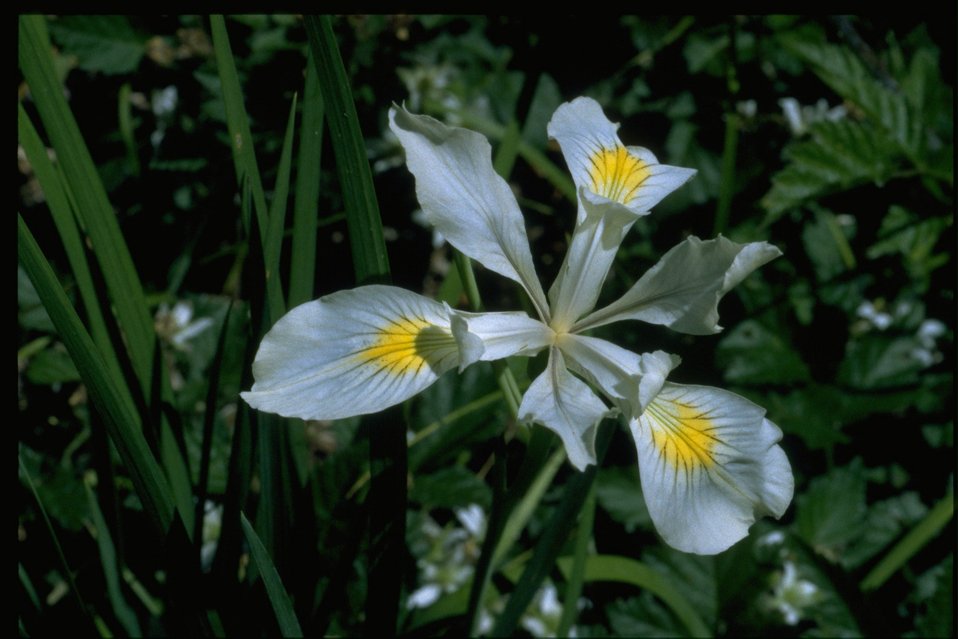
Closeup shot of Iris tenax.